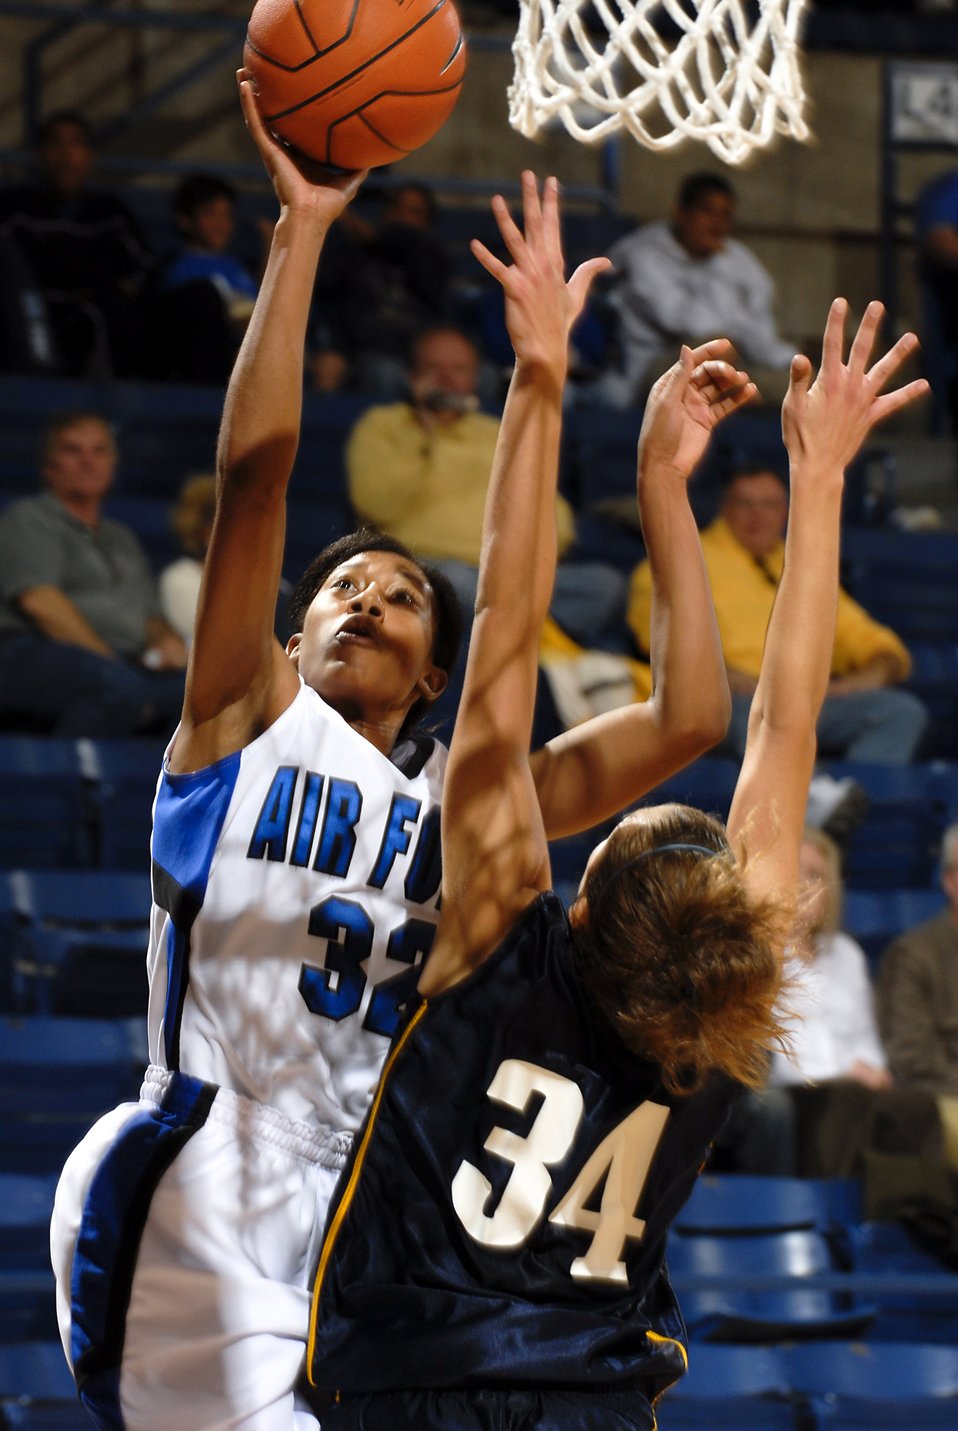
Basketball: Air Force coasts to 89-52 exhibition win over Regis

Air Force Academy senior forward Alecia Steele goes for a lay up above Regis University's Luaren Luebbe during the Falcons' 89-52 exhibition victory Nov. 3 at the Academy's Clune Arena. Steele had a game-high 23 points and 17 rebounds. Air Force opens its regular season Nov. 9 at Oklahoma State.